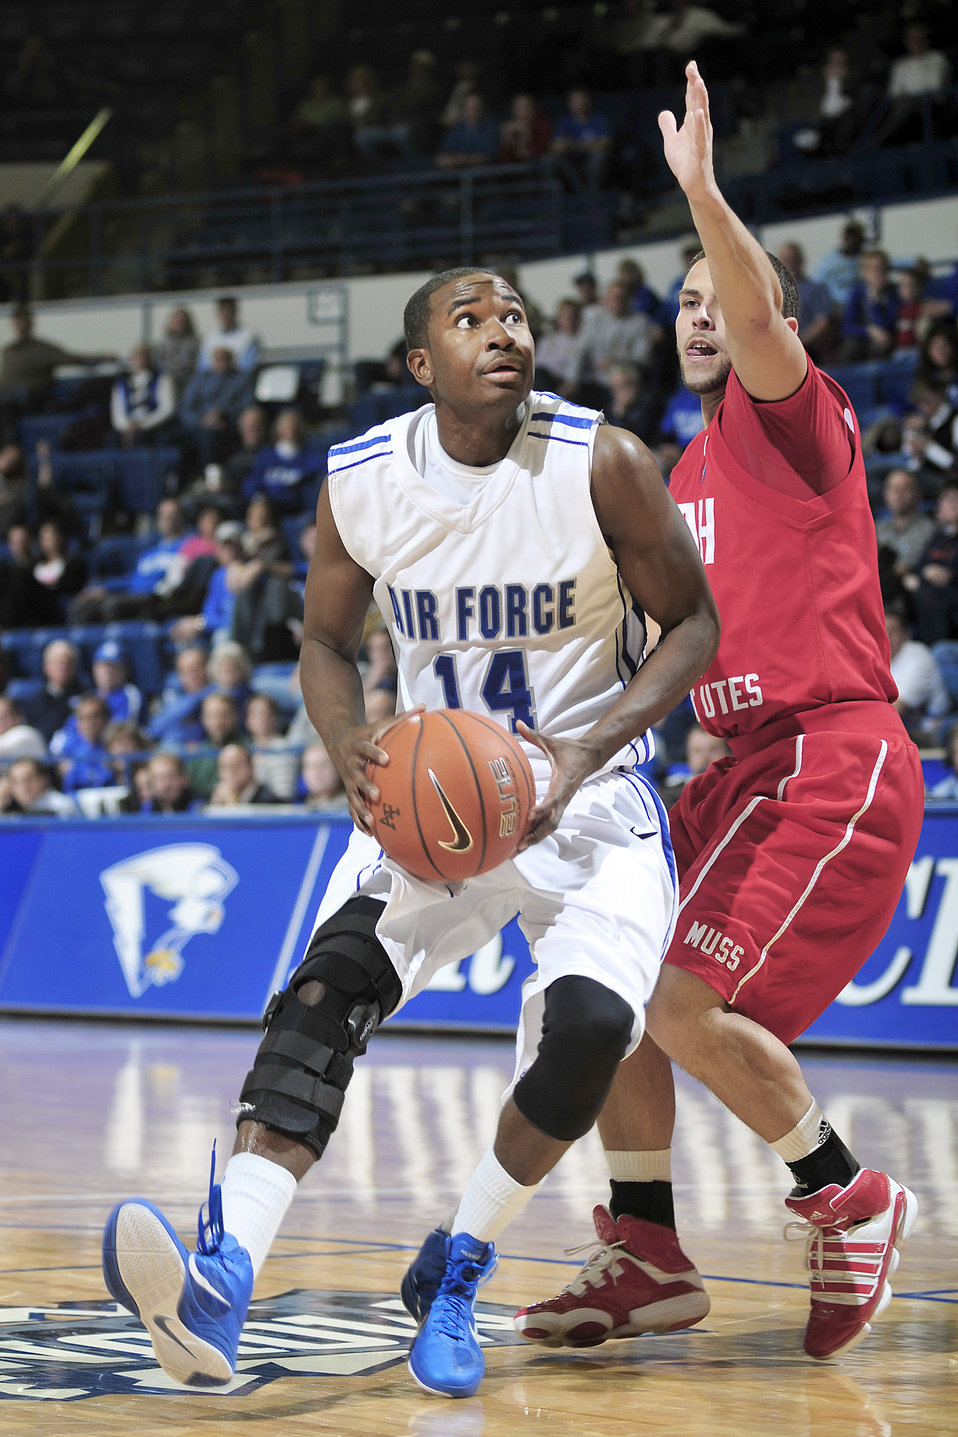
Falcons win home opener

Air Force Academy sophomore Mike Lyons prepares to shoot during the Falcons Mountain West Conference home opener Jan. 5, 2011, against Utah. Lyons netted a career high 26 points to lead the Falcons to an upset victory over the Utes by a score of 77-69.